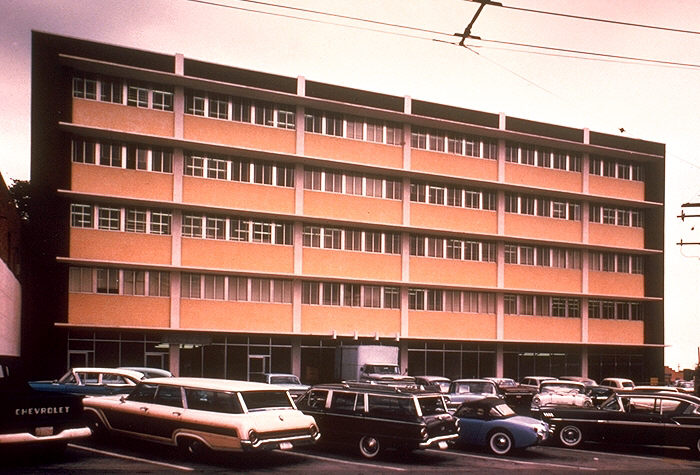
This was one of the Centers for Disease Control and Prevention (CDC) building located in the Buckhead region of Atlanta, Georgia in 1979.